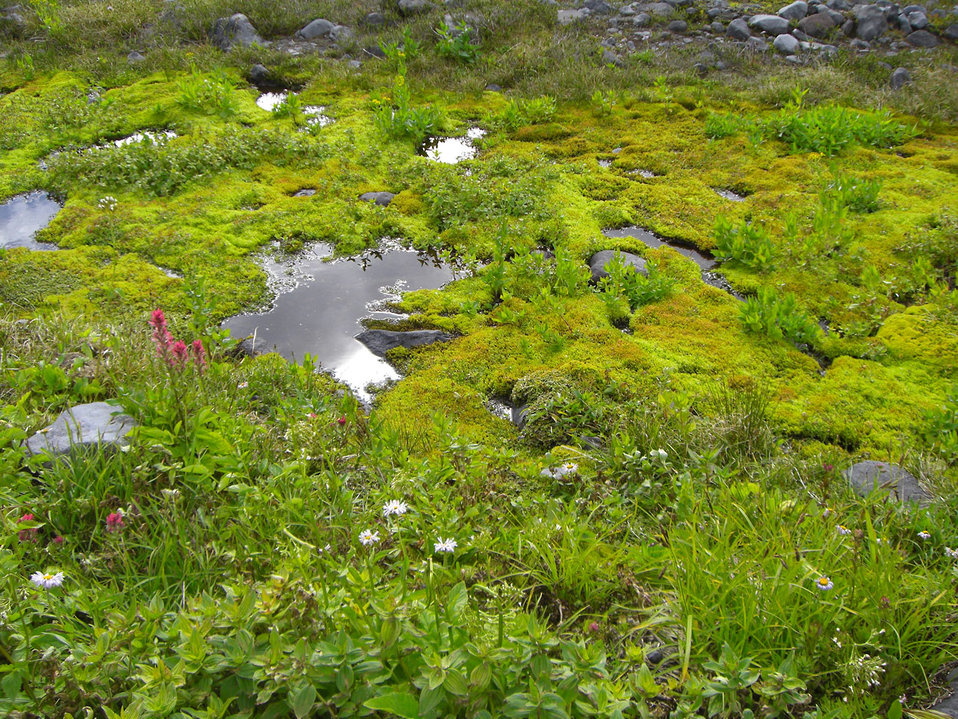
Super green

A super green meadow at paradise, mount rainier national park..